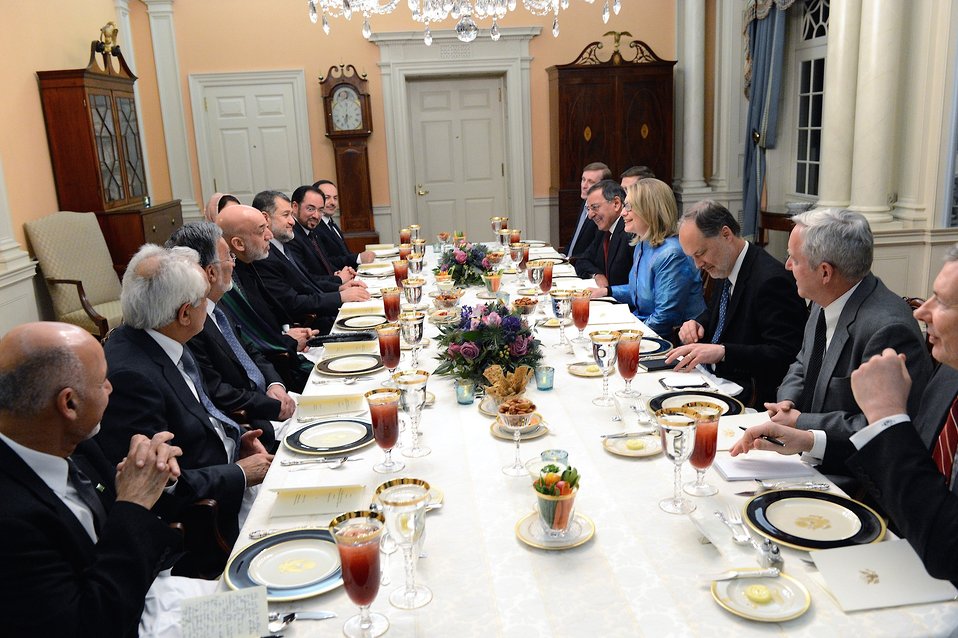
Secretary Clinton Hosts a Working Dinner for President Karzai

U.S. Secretary of State Hillary Rodham Clinton hosts a working dinner for Afghan President Hamid Karzai at the U.S. Department of State in Washington, D.C., January 10, 2013.